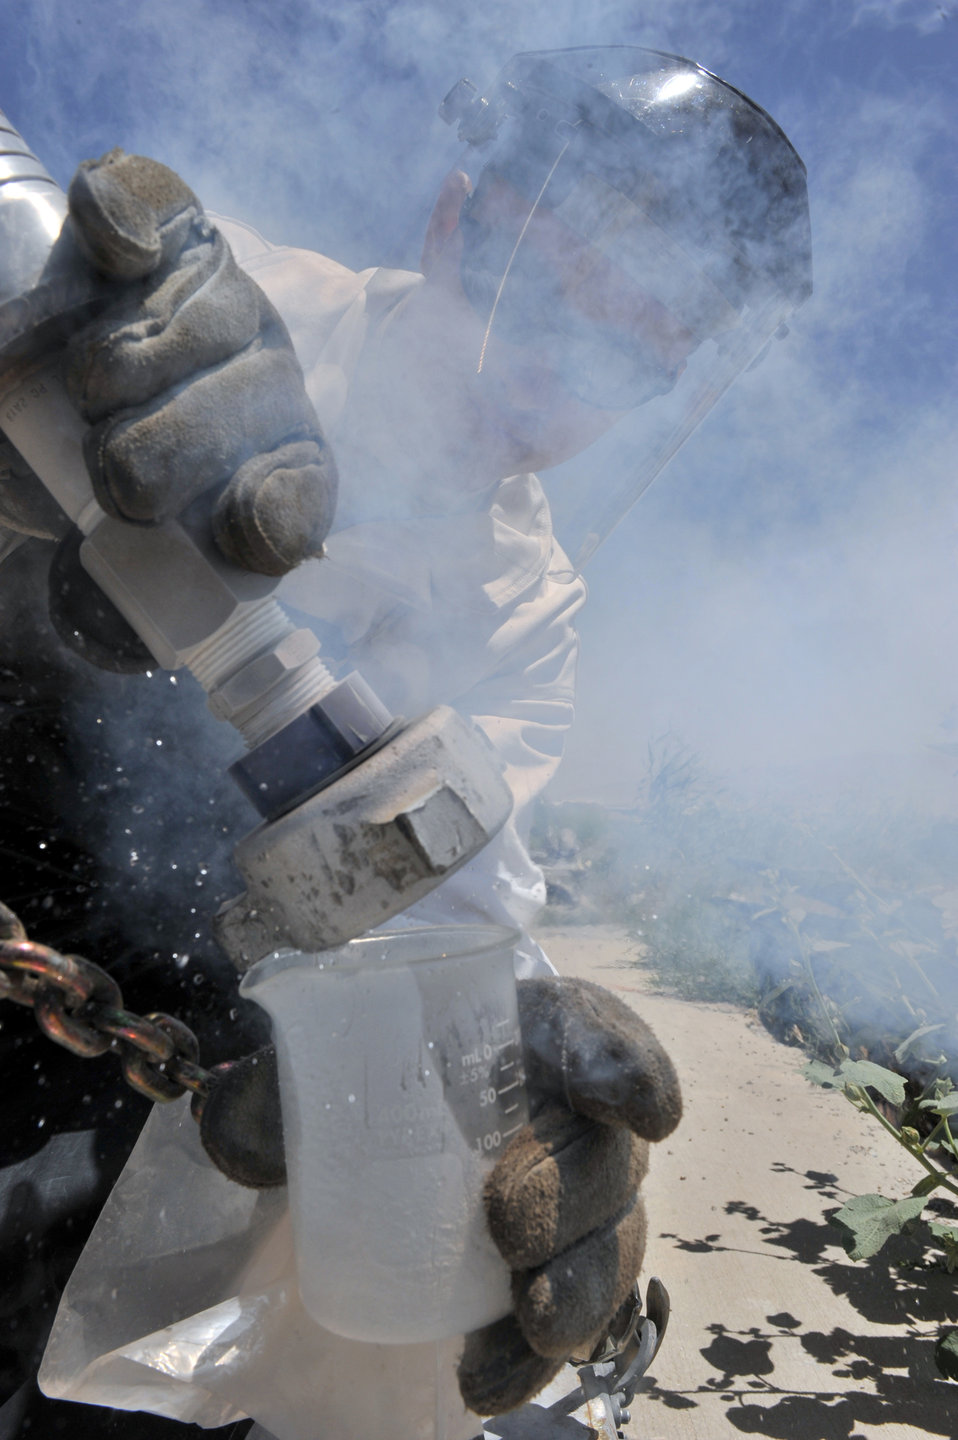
Deployed Airmen fuel combat outpost security

Staff Sgt. William Veal samples liquid nitrogen May 20, 2011, at Bagram Airfield, Afghanistan. Cryogenics supplies liquid oxygen and nitrogen which service the F-16 Strike Eagles. Sergeant Veal is a 455th Expeditionary Logistics Readiness Squadron cryogenic technician.